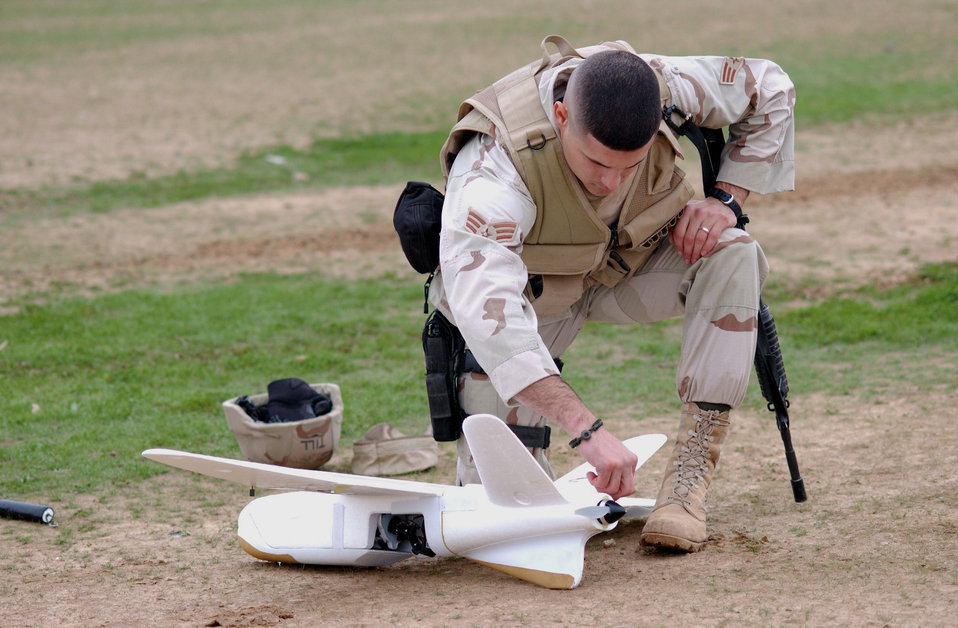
OIF, Desert Hawk

BALAD AIR BASE, Iraq (AFPN) -- Senior Airman David Tillery aligns the Desert Hawk control surfaces before a launch. The 7-pound unmanned aerial vehicle allows security forces to see beyond a base's perimeters and provide accurate, real-time visual assessments of detected threats. Airman Tillery is assigned to the 332nd Expeditionary Security Forces Squadron and is deployed from Shaw Air Force Base, S.C.